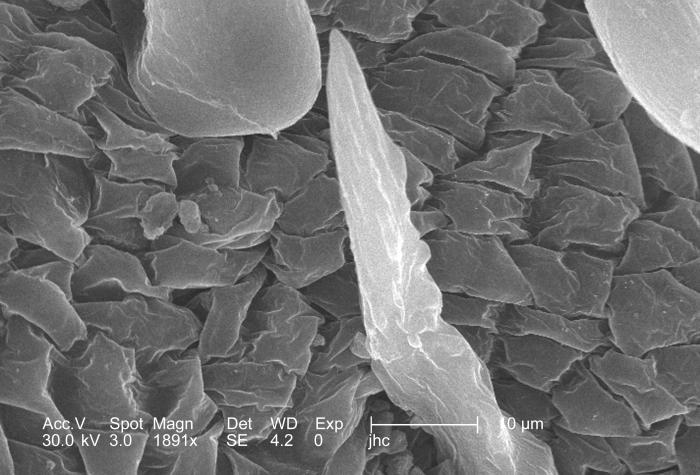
Under a moderately high magnification of 1891x, this scanning electron micrograph (SEM) revealed some of the morphologic ultrastructural details adorning the surface of a "bract" from a dogwood blossom, Cornus florida. Under this magnified scrutiny, what initially appeared to be a smooth, faintly textured surface, was actually a highly complex surface structure.